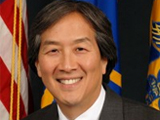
Howard Koh 160x120